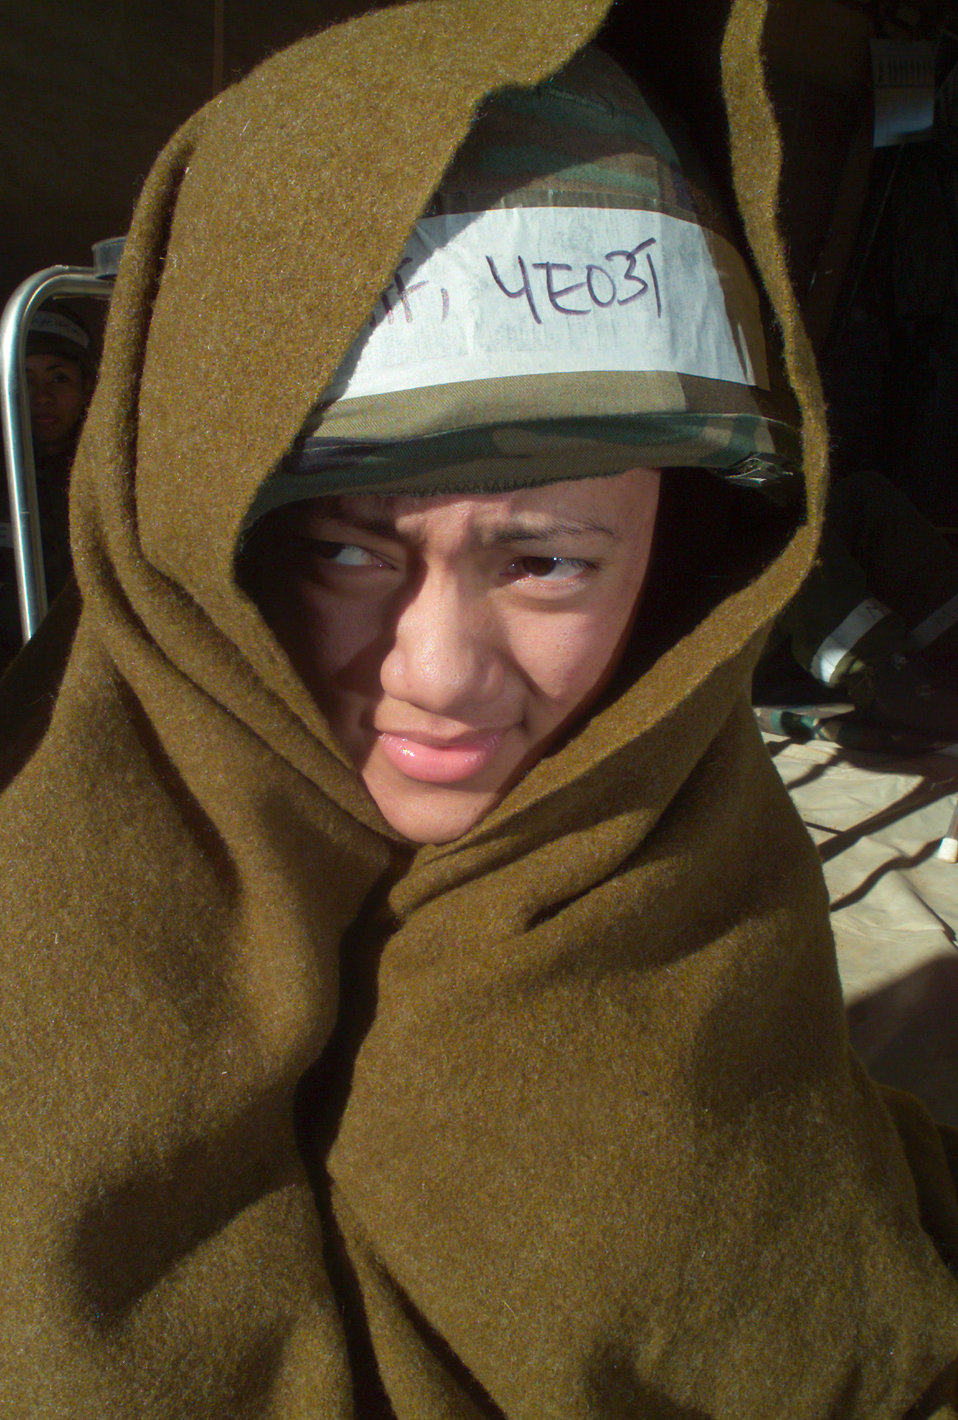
We're being bushwhacked!

DAVIS-MONTHAN AIR FORCE BASE, Ariz. -- Senior Airman Nalani Moenoa shelters herself against the cold during Exercise Bushwhacker 04-03 on Jan. 27. Bushwhacker exercises are held here quarterly to test the 355th Wing's readiness. Airman Moenoa is a public health journeymen with the 355th Medical Group.